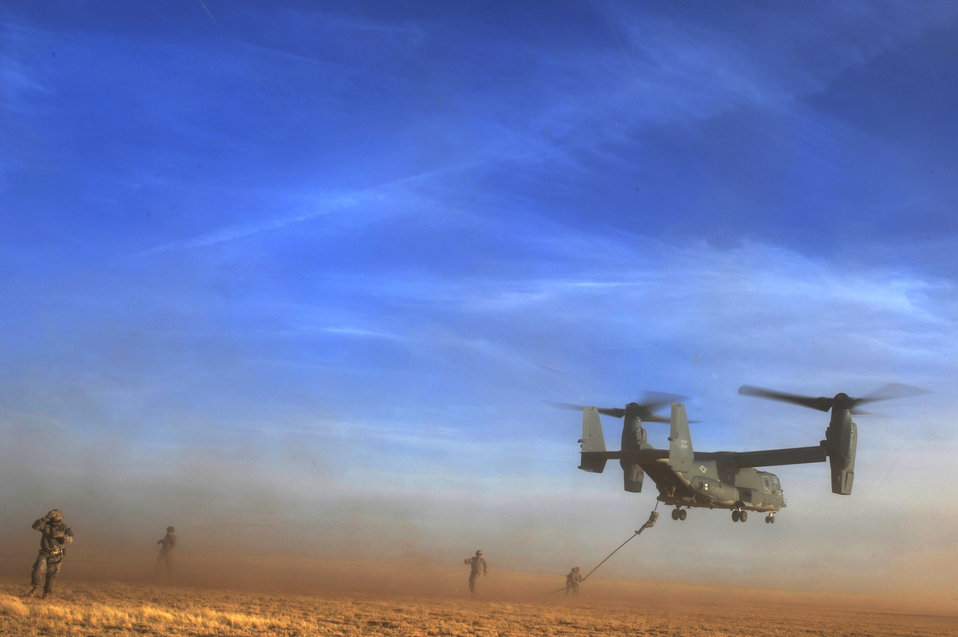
Joint training

Soldiers assigned to Alpha Company, 4th Battalion, 10th Special Forces Group move away after exiting a CV-22 Osprey via rope March 1, 2011, during Emerald Warrior at Cannon Air Force Base, N.M. Emerald Warrior is an annual two-week joint/combined tactical exercise sponsored by U.S. Special Operations Command officials to provide realistic training opportunities to conventional and special-operations forces.